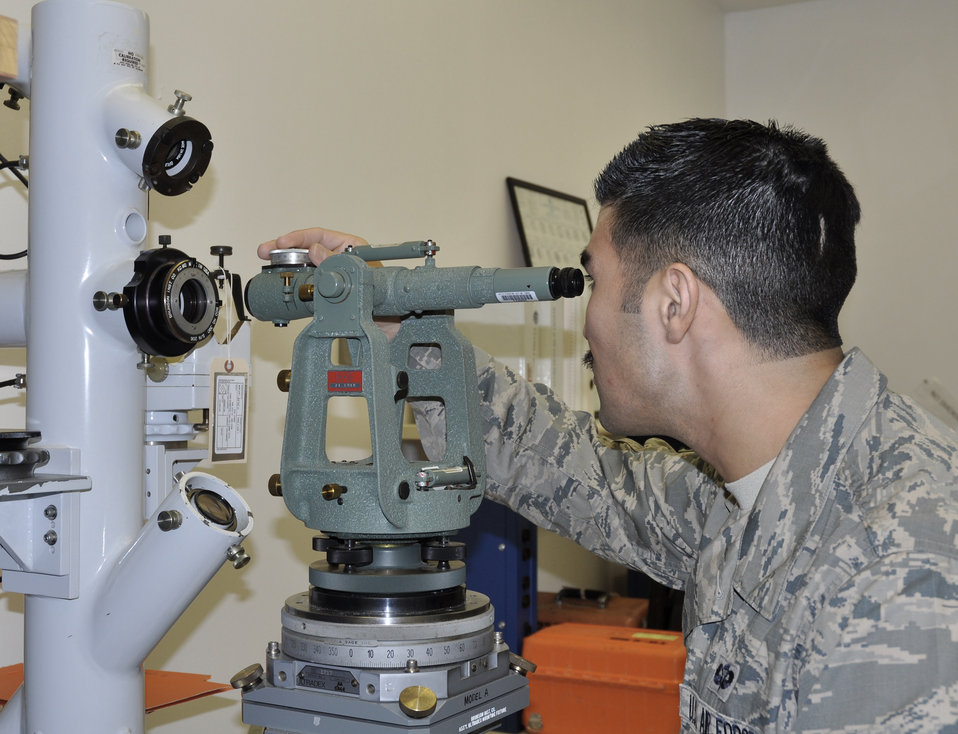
Precision: Everyday standard at base lab

Staff Sgt. Christopher Akin uses a short-range calibrator to ensure survey equipment, telescopes and other optical measuring instruments maintain proper alignment. Sergeant Akin is a Precision Measurement Equipment Laboratory technician in the 46th Maintenance Squadron at Eglin Air Force Base, Fla. The Eglin PMEL is responsible for maintaining more than 22,000 pieces of equipment assigned to 406 accounts.